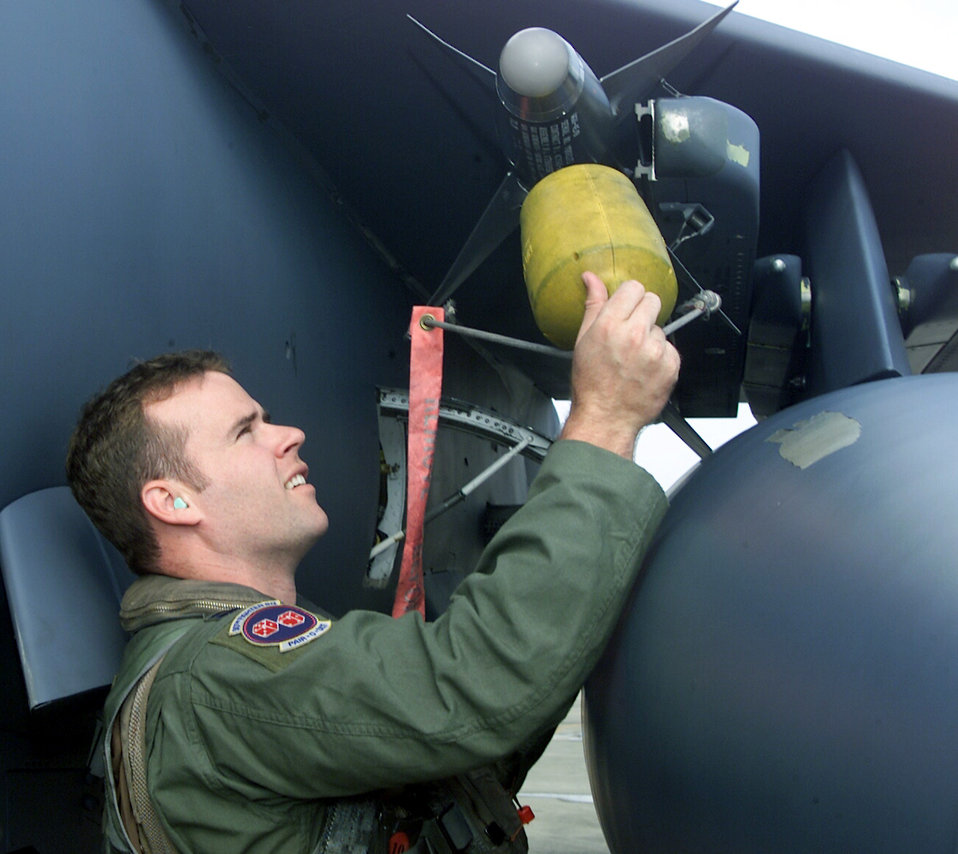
Hurricanes, home, mission focus of Gwangju Airmen

GWANGJU AIR BASE, South Korea -- Capt. Greg Priesser completes preflight checks before flying a sortie Sept. 15. He is one of more than 100 people here whose family and friends were affected by hurricanes Charley, Frances and Ivan. Captain Priesser is a 3rd Air Expeditionary Group F-15E Strike Eagle pilot and flight safety officer.